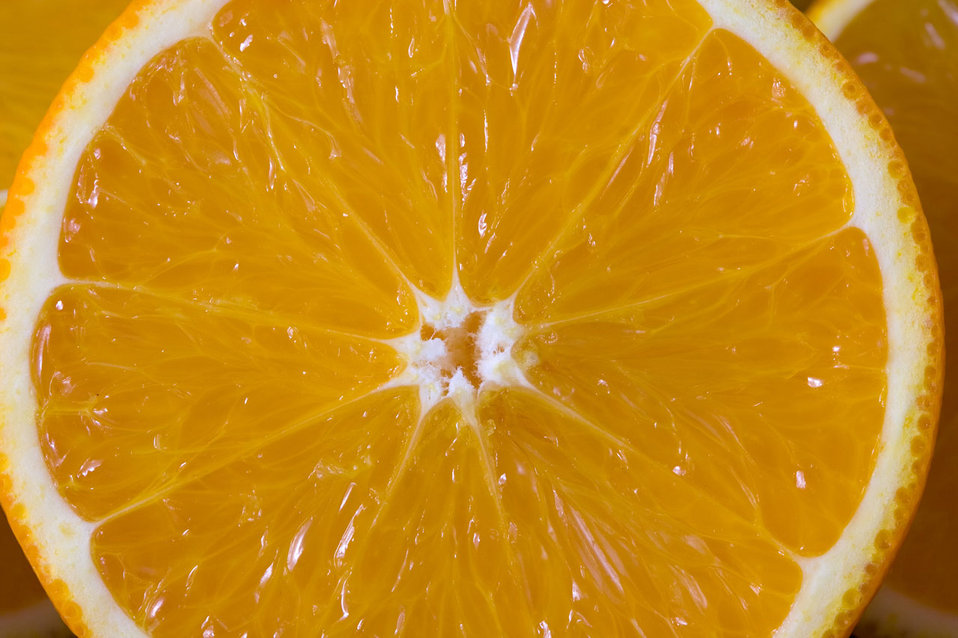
Orange

A close up image of sliced orange.